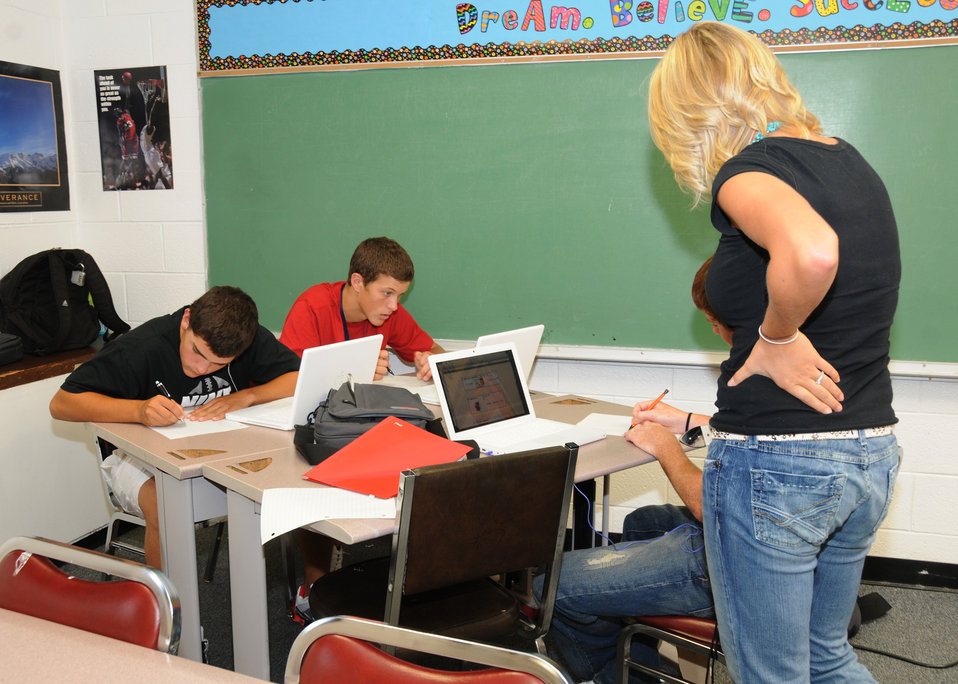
Every student at Crescent High School in Crescent, Oklahoma has access to a computer and the Internet to help with their education due to the U. S. Department of Agriculture (USDA) Rural Development (RD) Distance Learning and Telemedicine Program (DLT) loan allocated through the American Recovery and Reinvestment Act of 2009 (ARRA).